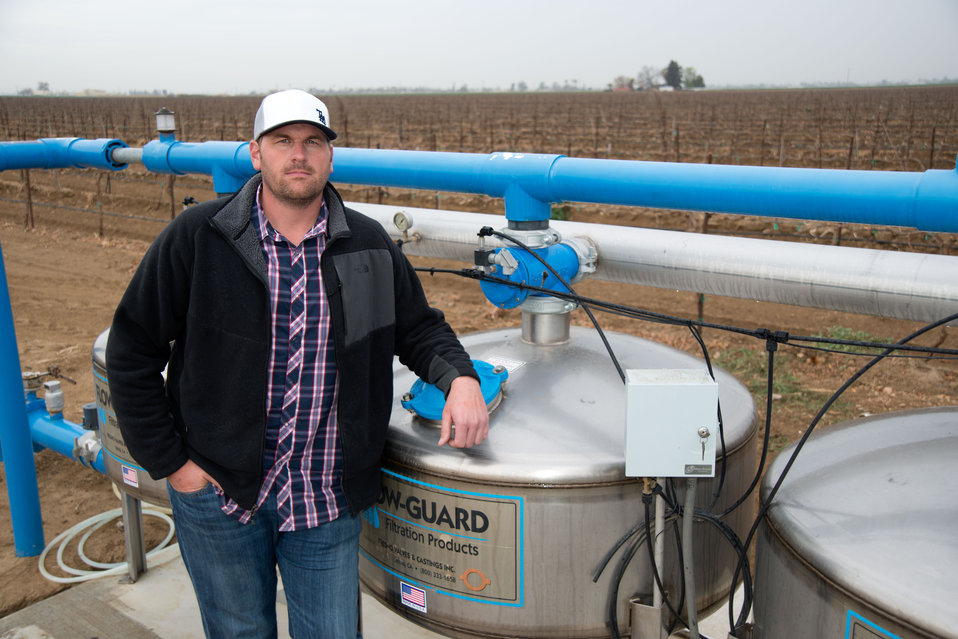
Michael Vandborg stands in front his drought stricken vineyard in the Lamont farming community in southeastern Joaquin Valley in Kern County, CA on Feb. 26, 2014.